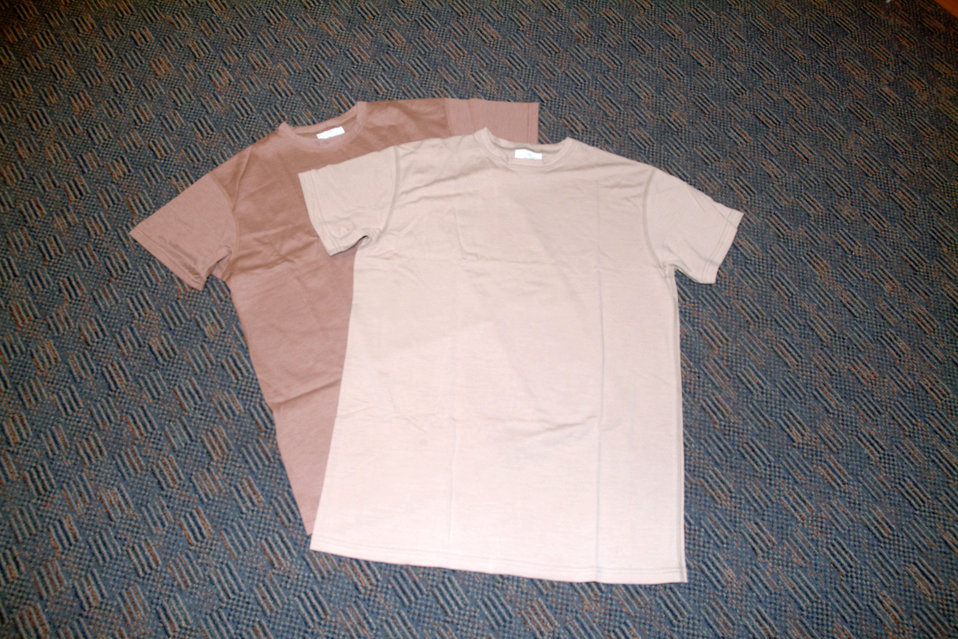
Airmen test new Air Force flight suits, T-shirts

Two versions of the flight suit T-shirt, made from wool or meta-aramid fibers (the same flame retardant material used in the flight suit), are being tested by volunteers participating in an operational utility evaluation. The test is being conducted by specialists with the 28th Test and Evaluation Squadron at Eglin Air Force Base, Fla.